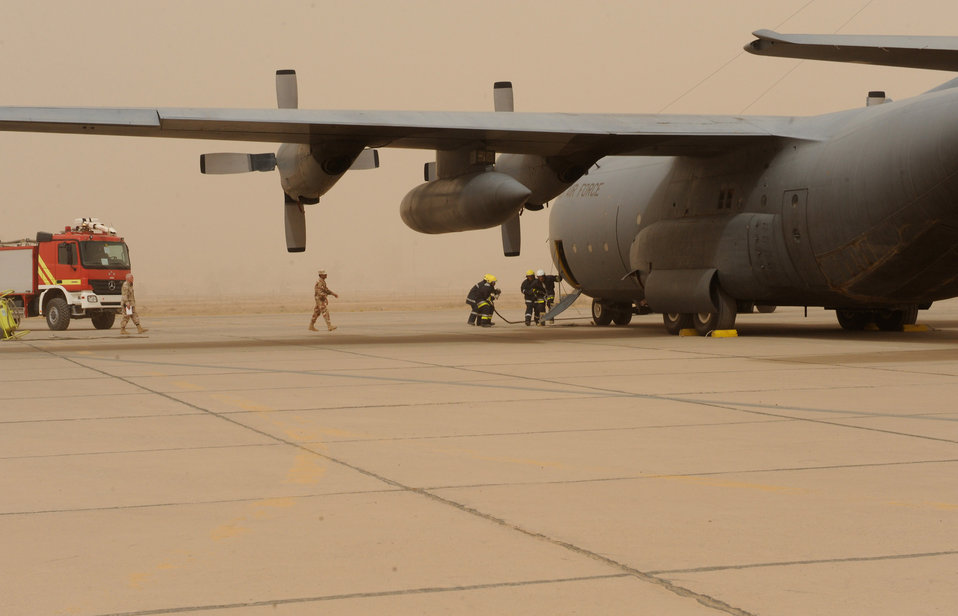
Iraqi air force soars through U.S.-guided exercise

Iraqi firemen respond to a simulated fire on an Iraqi C-130 June 16 at New Al Muthana Air Base, Iraq. The simulation was part of a ground emergency exercise to test the Iraqi's notification and response procedures.